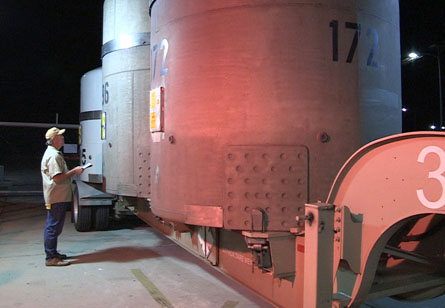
Waste Isolation Pilot Plant Highlights Fiscal Year 2011 Accomplishments

Paul Paneral of URS Washington TRU Solutions Facility Operations checks the 10,000th shipment of transuranic (TRU) waste upon its arrival at the Waste Isolation Pilot Plant.